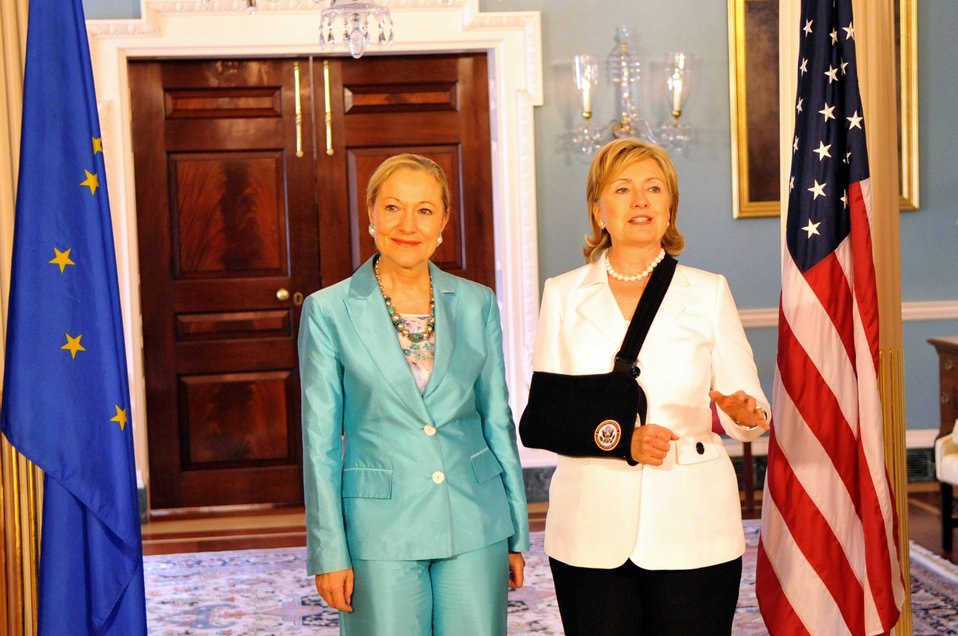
Secretary Clinton Meets With European Commissioner for External Relations and European Neighborhood Policy

U.S. Secretary of State Hillary Rodham Clinton meets with H.E. Dr. Benita Ferrero-Waldner, European Commissioner for External Relations and European Neighborhood Policy at the U.S. Department of State in Washington, DC July 10, 2009.